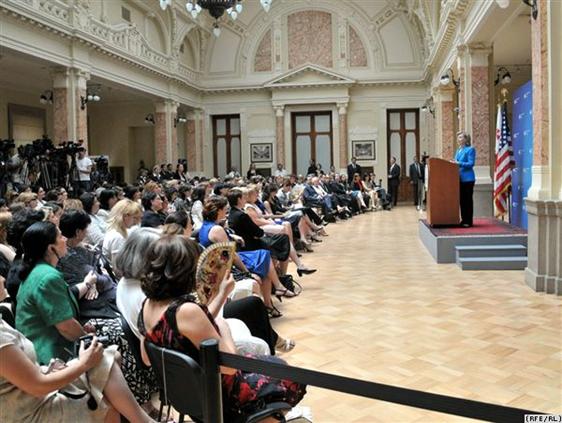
Secretary Delivers Remarks to Georgian Women Leaders

U.S. Secretary of State Hillary Rodham Clinton delivers remarks to Georgian Women Leaders at the Town Hall meeting in Tbilisi, Georgia, on July 5, 2010.